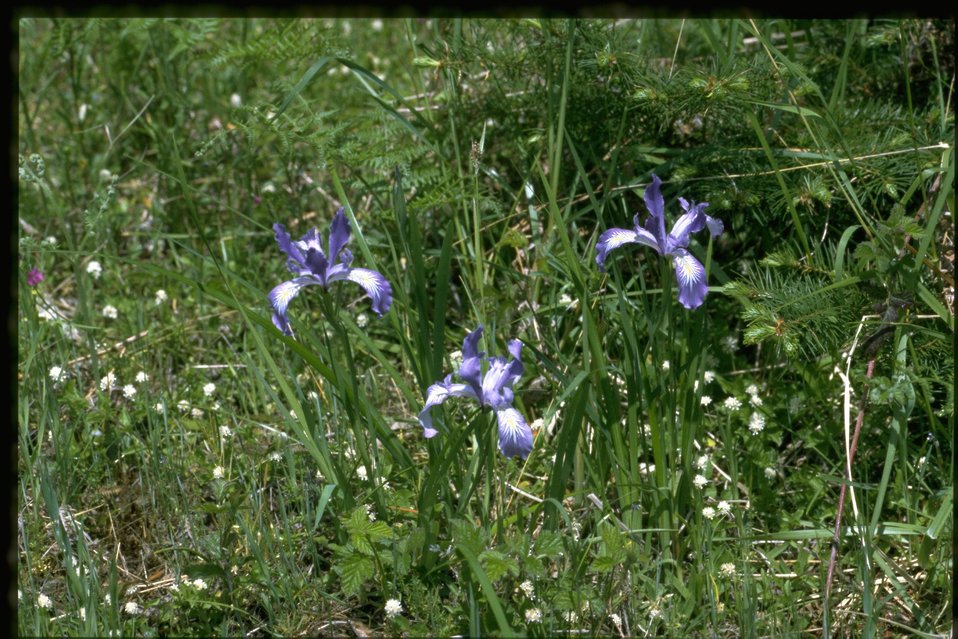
Farshot of Iris tenax.